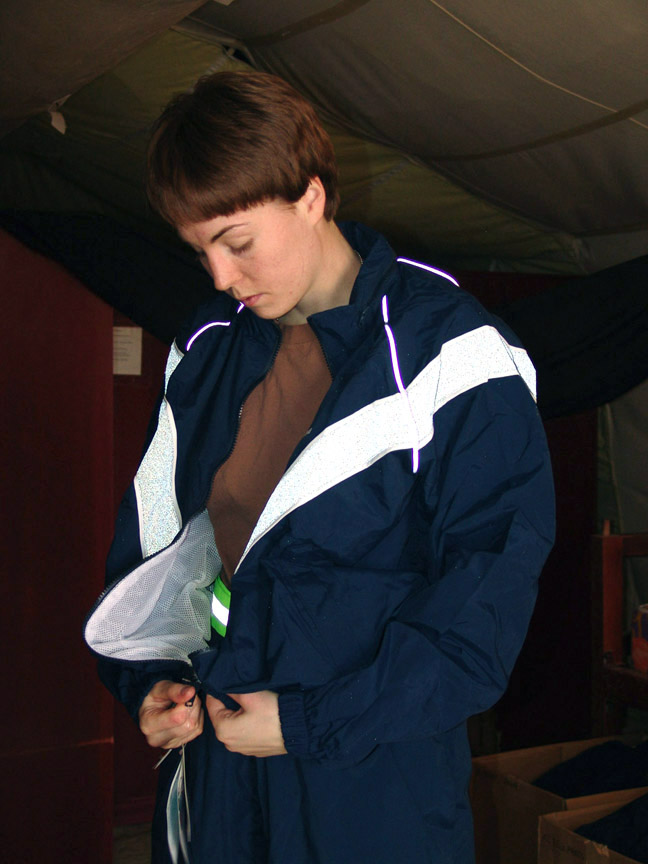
PT-ready!

SOUTHWEST ASIA -- First Lt. Danielle Boz checks the fit of a new Air Force physical training uniform jacket at a forward-deployed location. The jacket and matching warm-up pants combine with new Air Force PT shorts and shirts to give Airmen a uniform they can wear both off-duty and while exercising. Lieutenant Boz is an intelligence officer assigned to the 386th Air Expeditionary Wing.